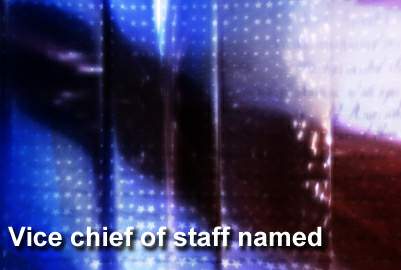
New vice chief of staff takes office

Gen. Carrol H.